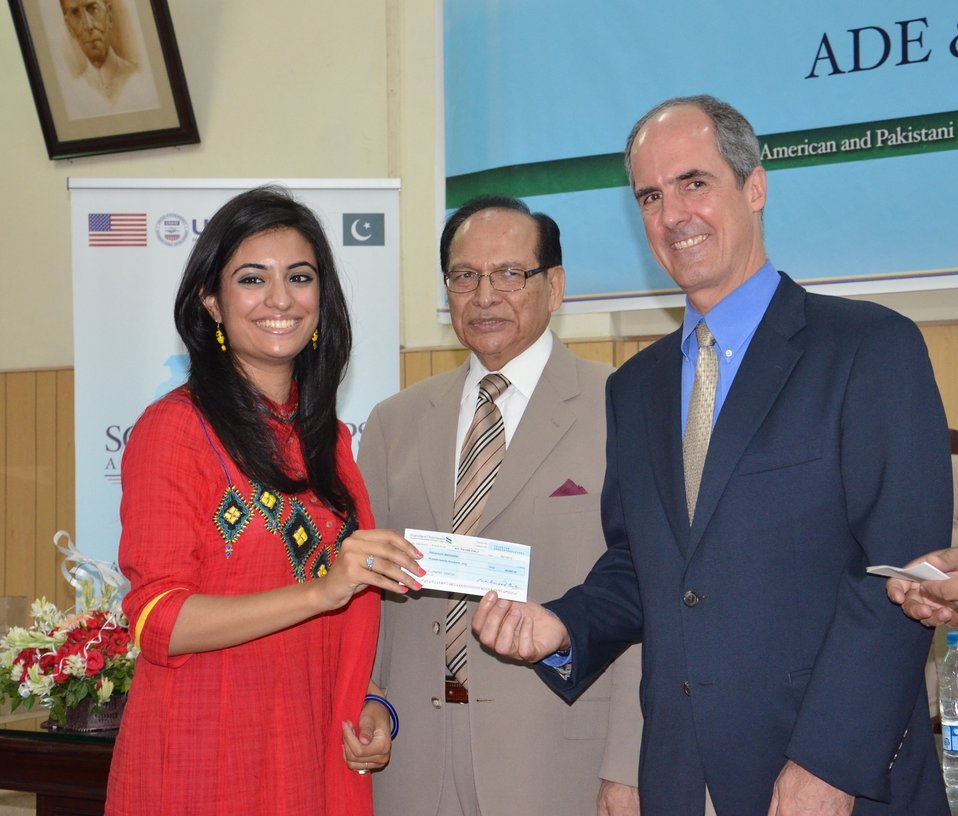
Mr. Ted Gehr, Regional Director USAID, awarding a scholarship to a student from Fatima Jinnah Women University

The U.S. Agency for International Development (USAID) through its Teacher Education Project awarded scholarships to 147 talented students enrolled in the recently introduced two-year Associate Degree in Education (ADE) and four-year Bachelor’s Degree in Education programs in Punjab.